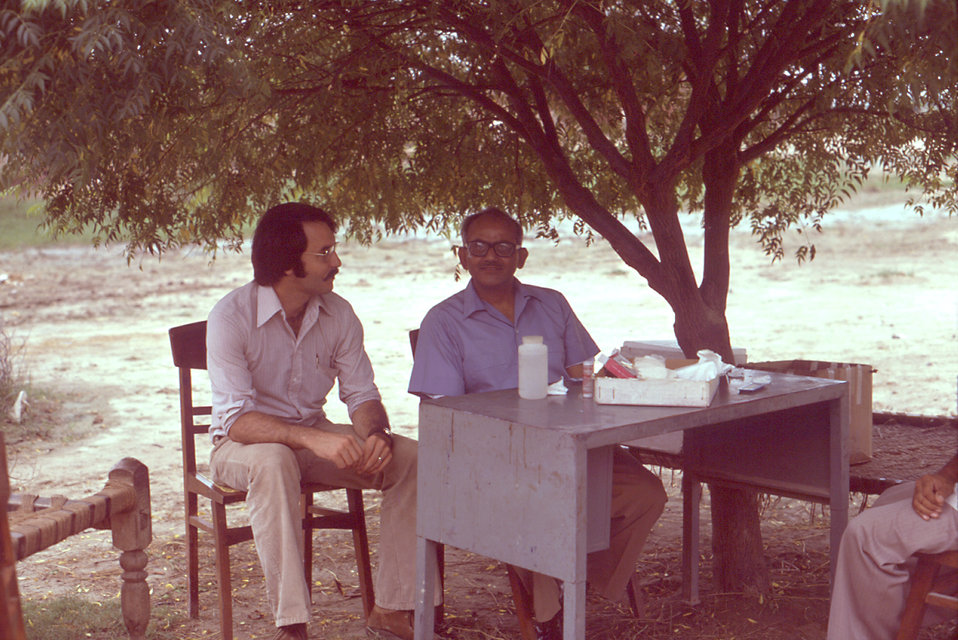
This was CDC epidemiologist Edward Baker, M.D., M.P.H. investigating malathion poisoning cases in Pakistan, 1977.